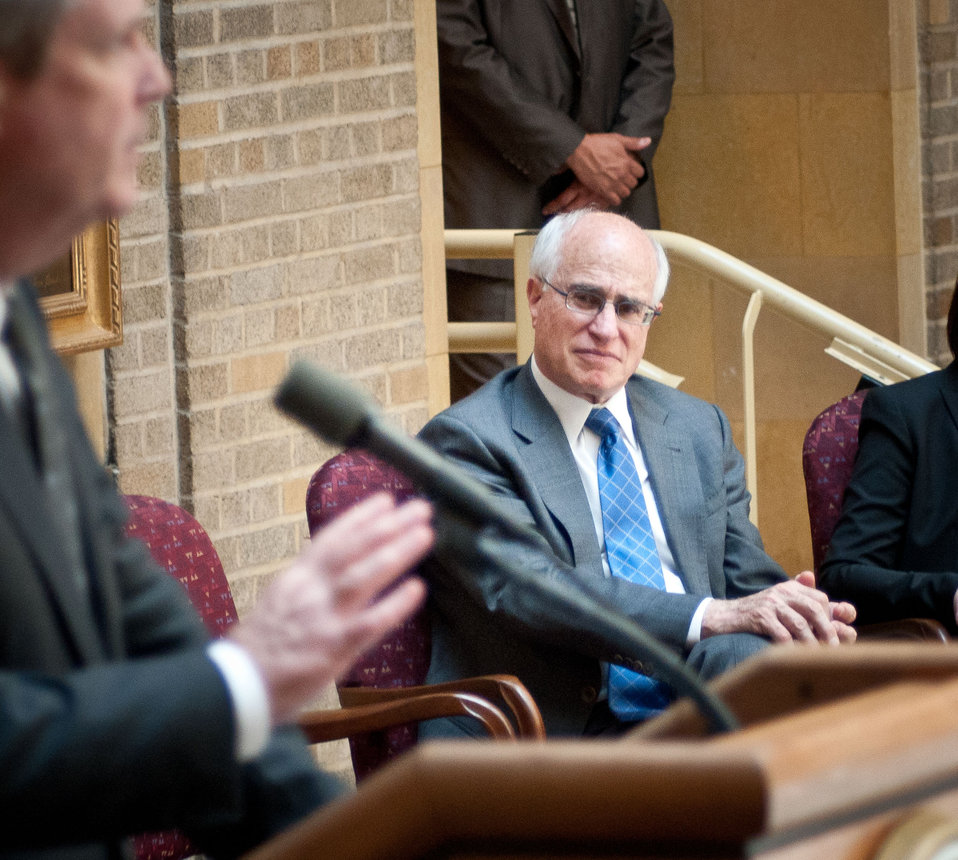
U.S. Department of Agriculture Undersecretary for Natural Resources and Environment Harris Sherman introduced Secretary Tom Vilsack to the audience at the International Year of Forests (IYOF) celebration on Friday, June 3, 2011 on the Patio of the Whitten Building, U.S.Department of Agriculture in Washington, DC.